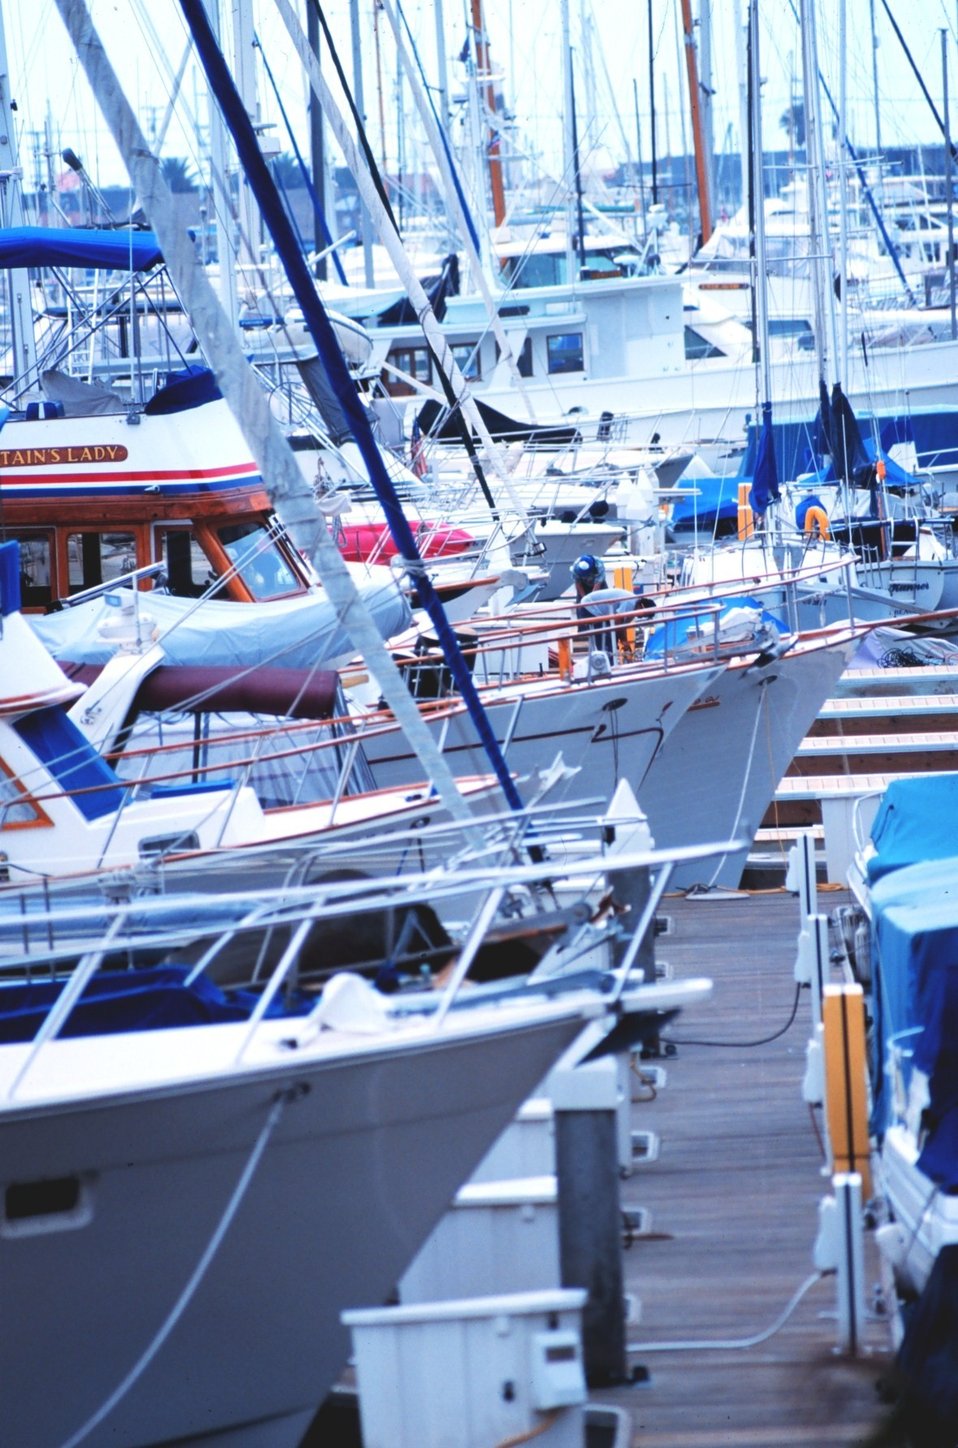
The harbor at Santa Barbara